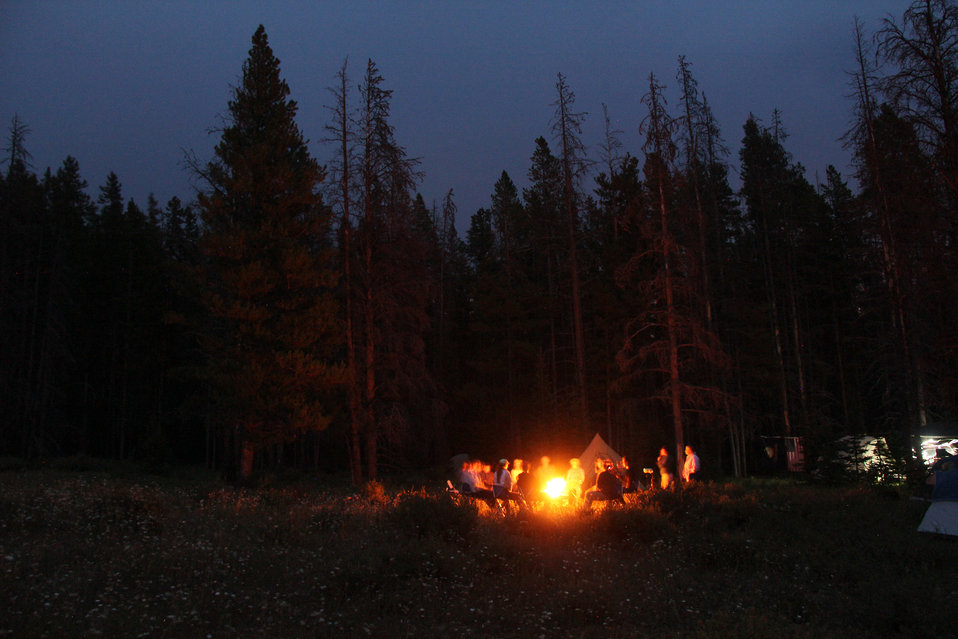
wilderness night campgire untrammeled2

A group of students sit around the campfire talking with their escorts during a trip into the Bob Marshall and Scapegoat Wilderness Areas in Montana. Their adventure on horseback and by foot is documented in the U.S. Forest Service video “Untrammeled.”